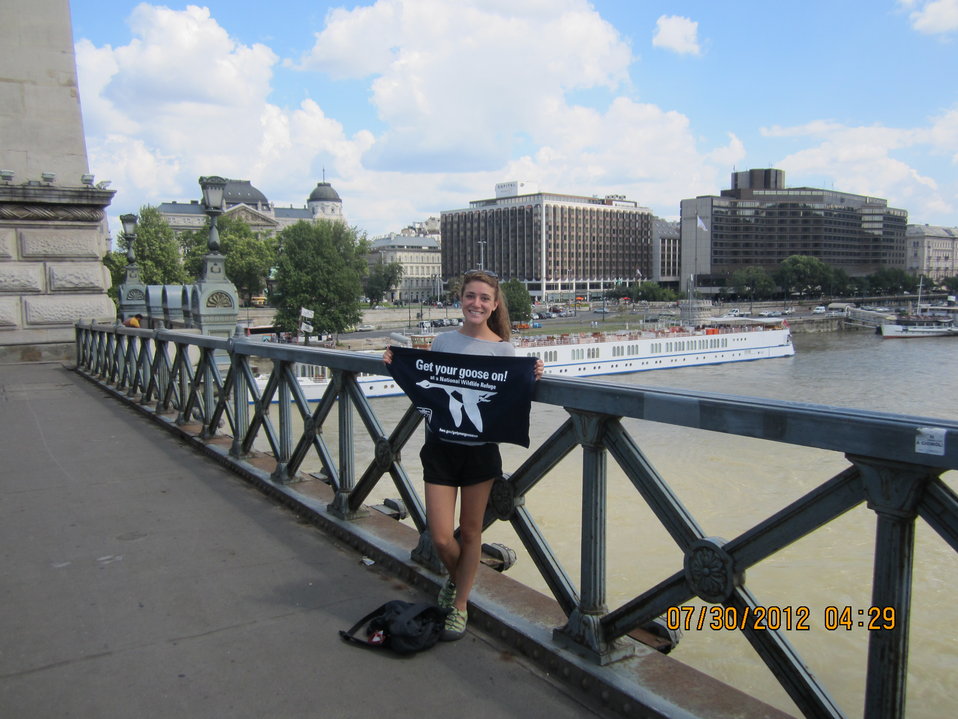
Get Your Goose On! - in France